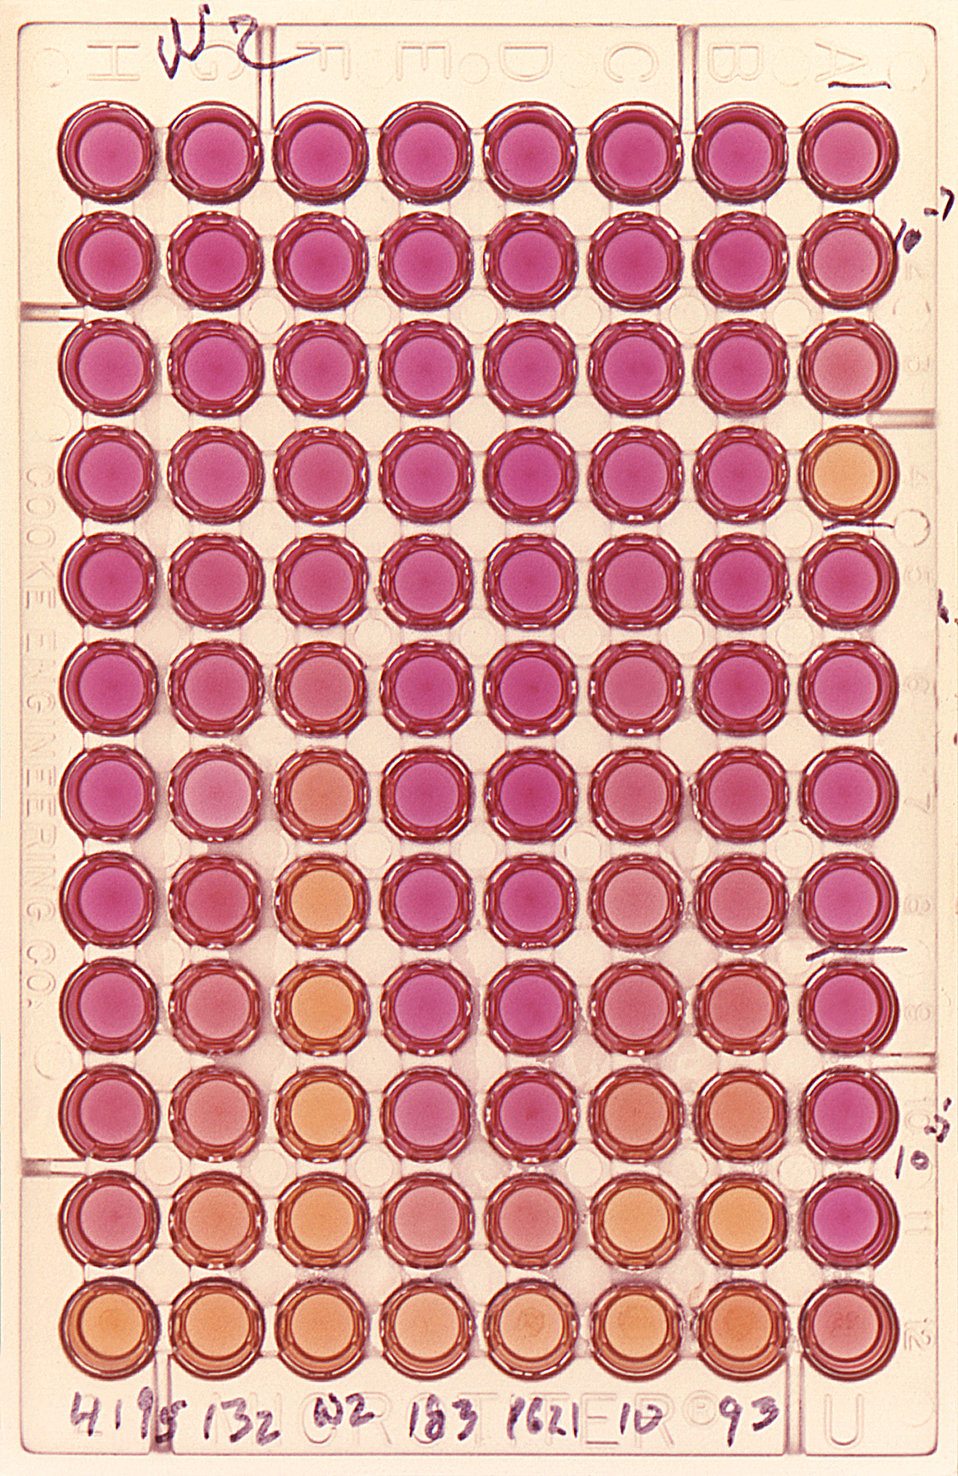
This photograph depicted the results of a metabolic inhibition (MI) test, which compared the relatedness of Mycoplasma hominis, strain W2, to that of other, unidentified strains of M. hominis.